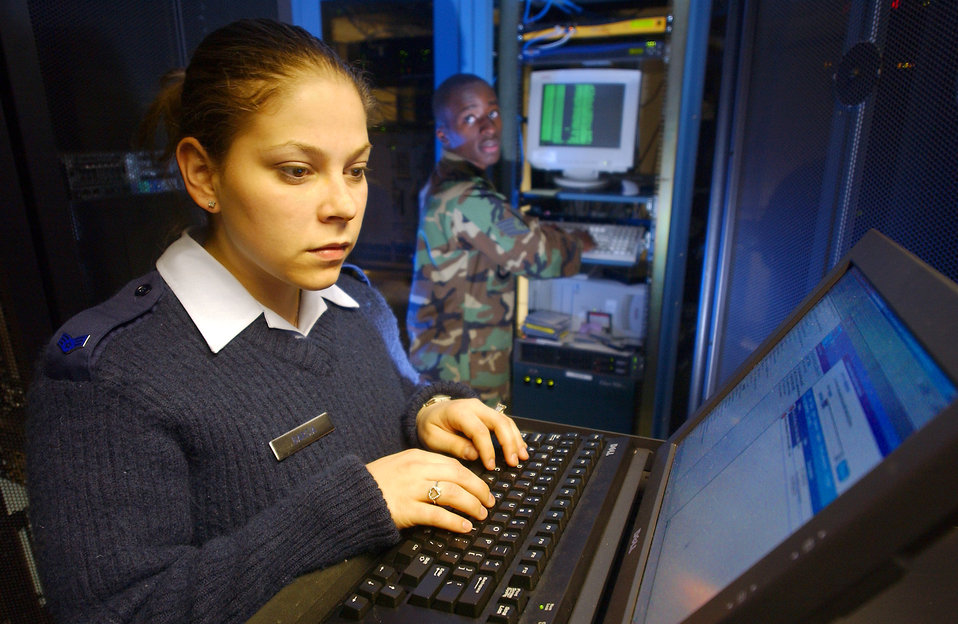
Monitoring the network

ROYAL AIR FORCE MILDENHALL, England -- Senior Airman Barbara Garcia (front) creates a user account while Staff Sgt. Adrian Langford uses a combat information transport system to monitor the network here April 19. Airman Garcia and Sergeant Langford are network control center technicians with the 424th Communications Squadron.